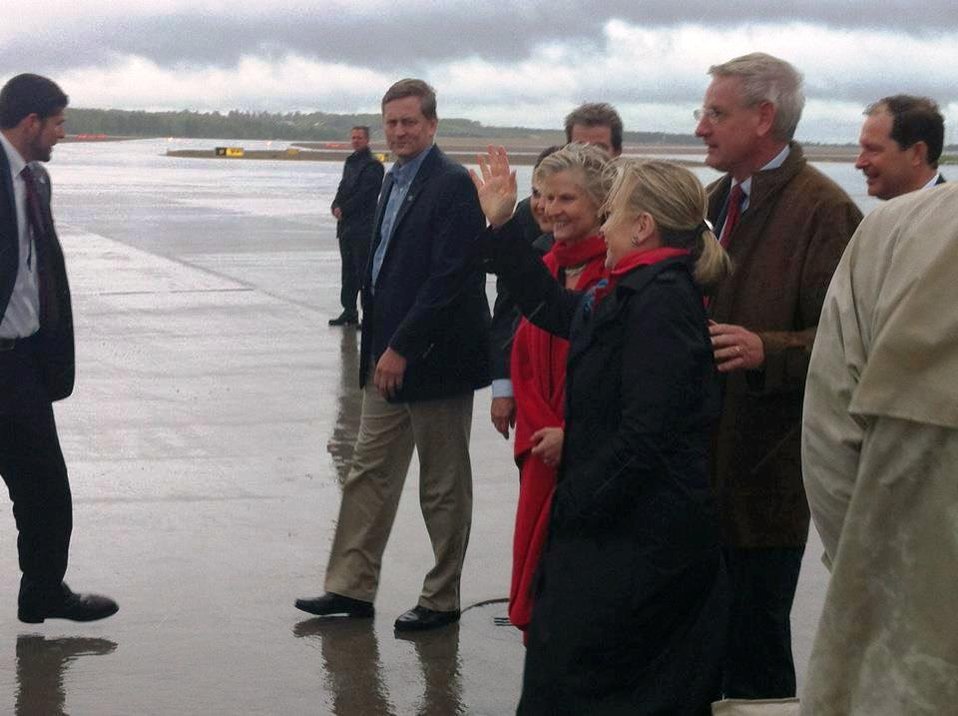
Secretary Clinton Is Greeted By Swedish Foreign Minister Bildt

U.S. Secretary of State Hillary Rodham Clinton is greeted by Swedish Foreign Minister Carl Bildt in Stockholm, Sweden, on June 3, 2012.